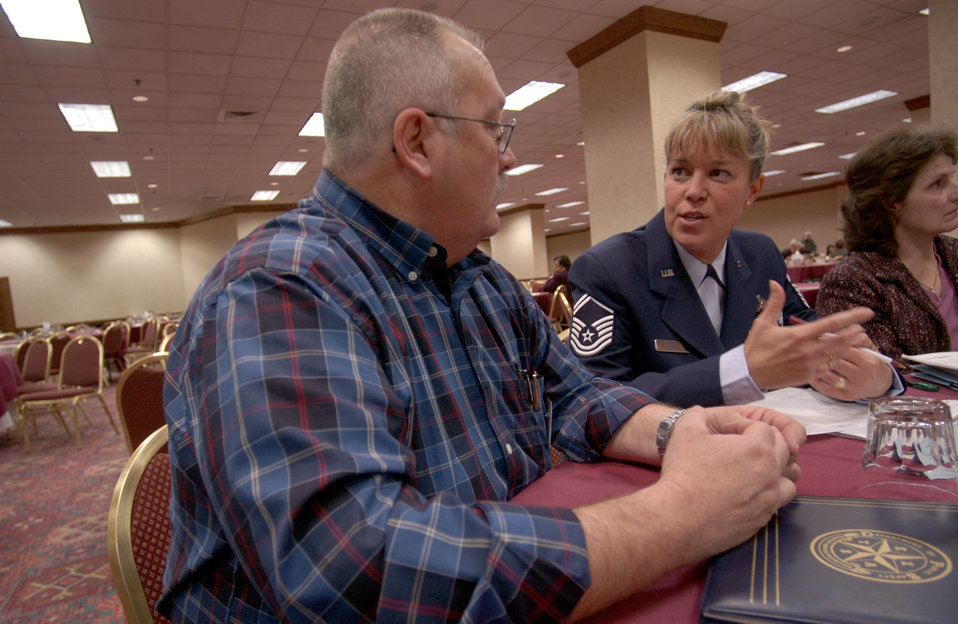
Air Force maintains contact with missing servicemembers' families

SAN ANTONIO -- Senior Master Sgt. Cheryl Wells talks with David Lewis during the Department of Defense family member update here Feb. 26. Mr. Lewis' father, Col. James Lewis, was a B-57 Canberra pilot during the Vietnam War. He disappeared during a mission on April 7, 1965. Sergeant Wells is assigned to the Air Force Personnel Center missing persons branch here.